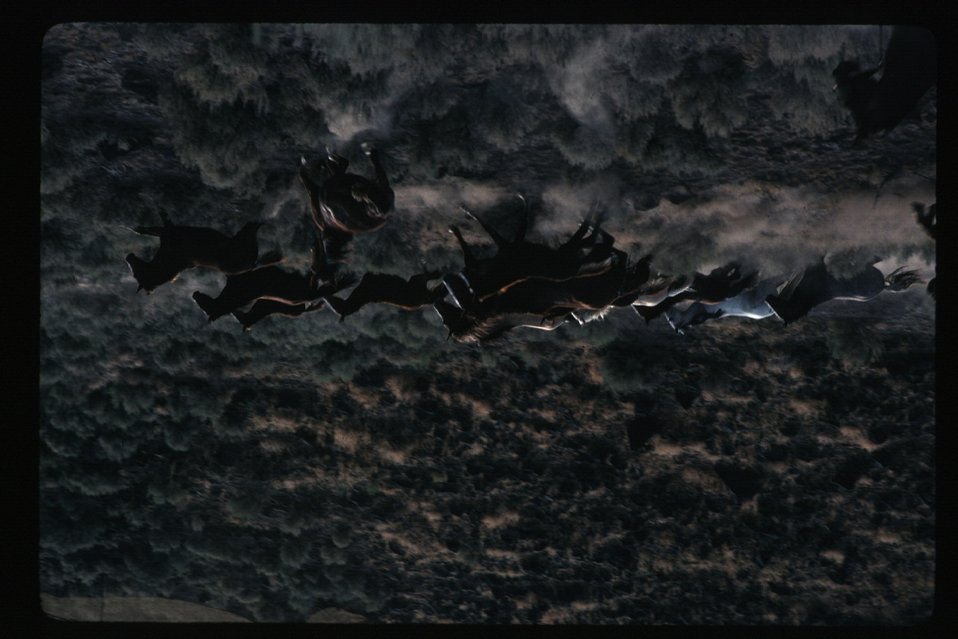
Wild horse roundup Wild Horse and Burro Adoption Program LSRD Lower Snake River District